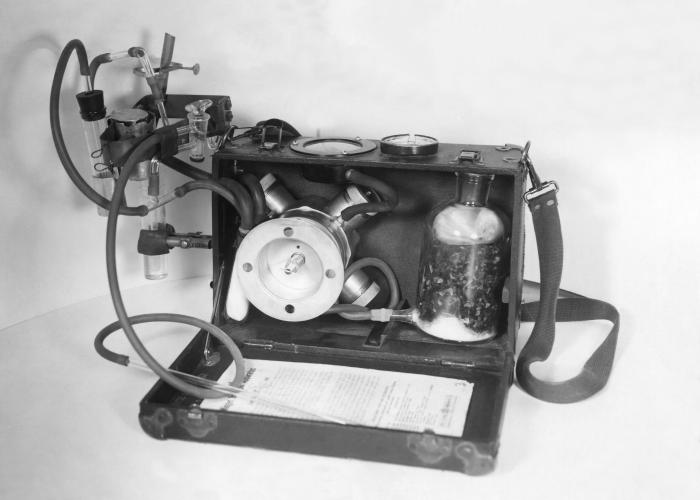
This 1948 historical photograph was provided by the Center for Disease Control's (CDC), National Institute for Occupational Safety and Health (NIOSH). Reprinted from the January, 1949, 'Industrial Hygiene Newsletter', it depicted a Mine Safety Appliances Company (MSA), Midget Impinger� apparatus, that was used to collect halogenated hydrocarbons (HHC). HHCs are a cardiovascular, or blood toxicant. In the 1940s and 1950s, the Industrial Hygiene Division (IHD) investigated hazards associated with many types of manufacturing activities. This design was an example of a measure meant to improve workplace safety by keeping vapors from escaping.